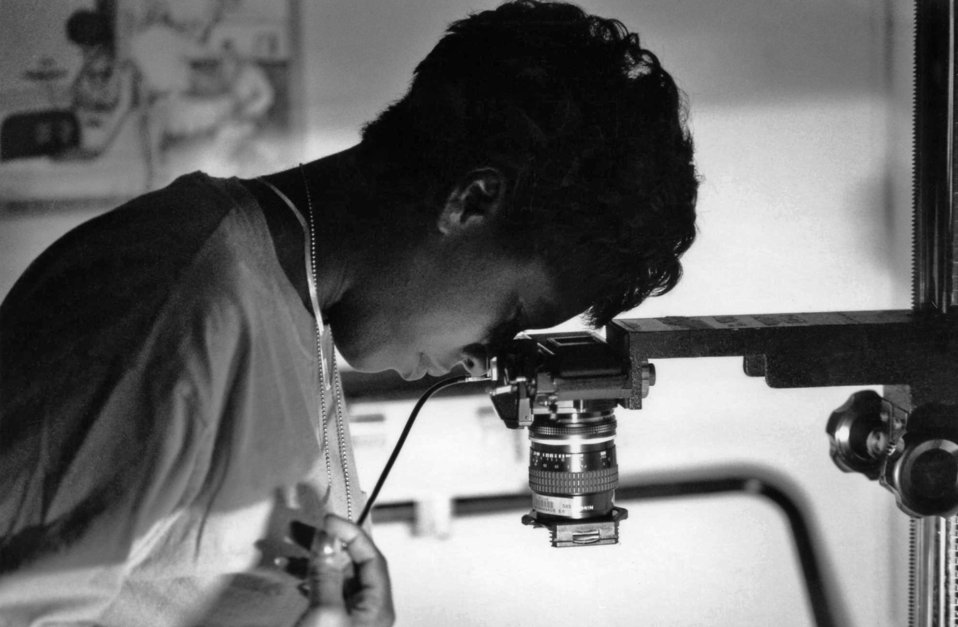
This 1991 photograph showed Training and Laboratory Program Office member, Regina Bess, using a copy stand in order to photograph artwork that would be used in one of the many Centers for Disease Control presentations.